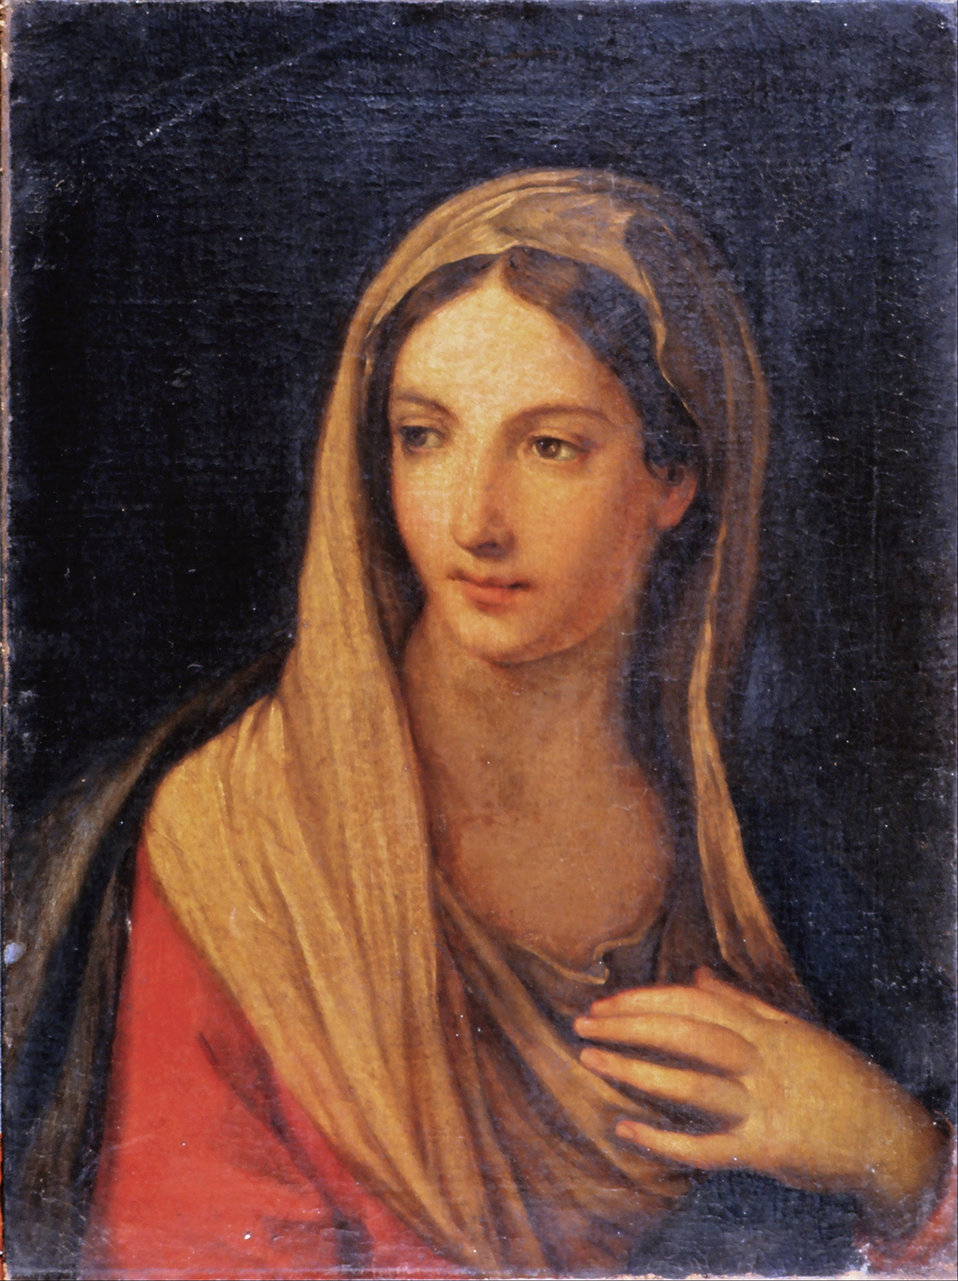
Albani, Francesco - Madonna - Google Art Project